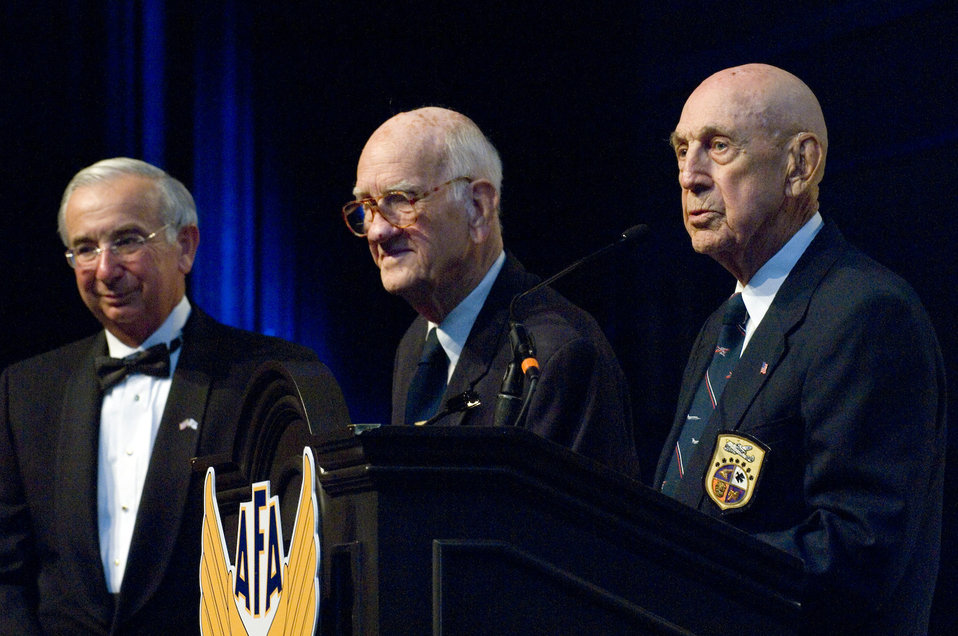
Air Force Association honors Doolittle Raiders, Tuskegee Airmen

Joseph Sutter presents retired Maj. Thomas Griffin and retired Lt. Col. Richard Cole the Lifetime Achievement Award at the Air Force anniversary dinner Sept. 16, 2009, at the Gaylord National Hotel and Convention Center in National Harbor, Md. Major Griffin and Colonel Cole are members of the Doolittle Raiders. Mr. Sutter is the Air Force Association chairman of the board. The dinner was the end of the 2009 Air Force Association Air & Space Conference and Technology Exposition.